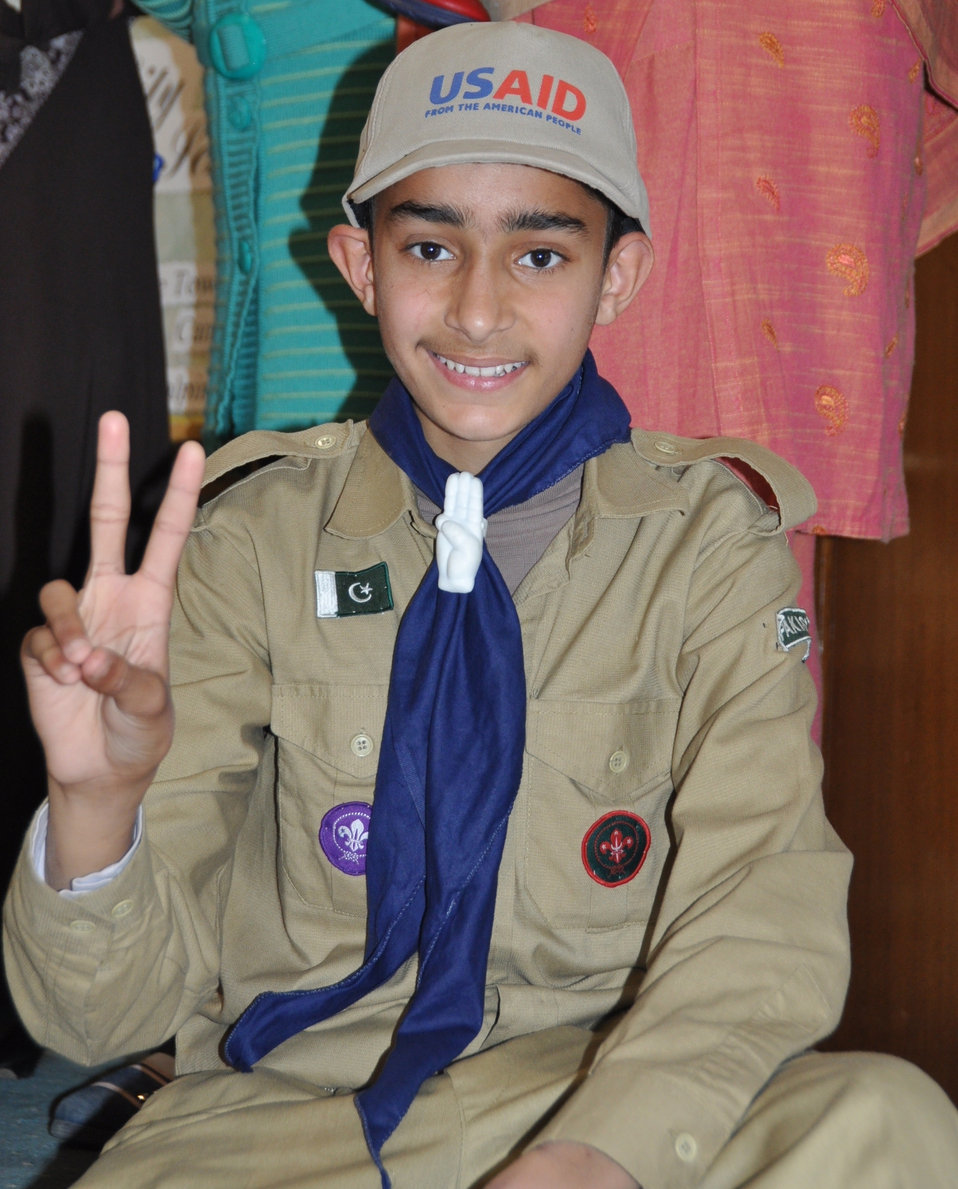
Pakistan Knowledge Festival

Islamabad, January 22, 2011 – A Boy Scout wearing a USAID cap at the Pakistan Knowledge Festival in Islamabad.